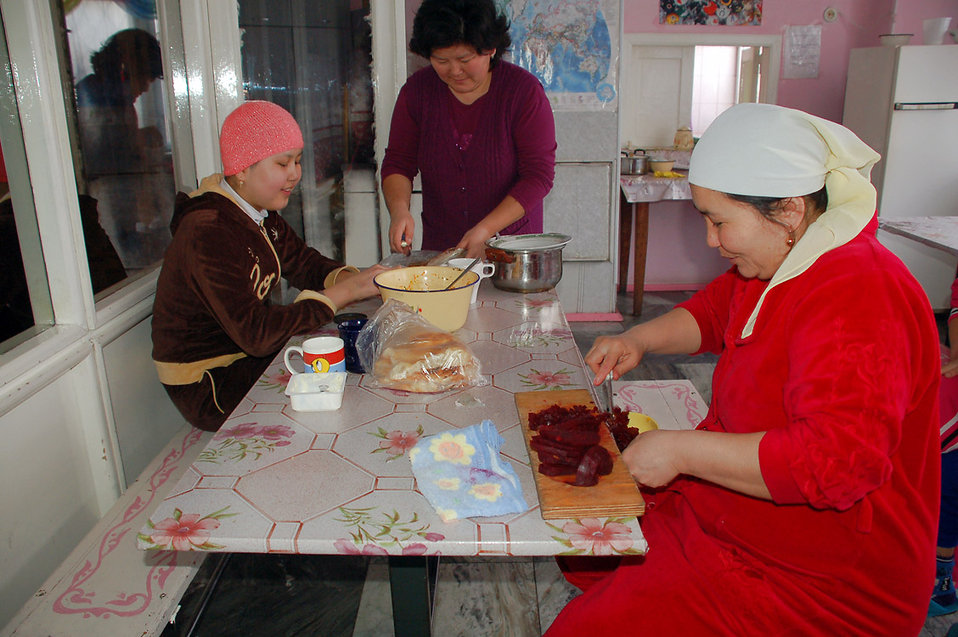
Manas Airmen tend to children's cancer center needs

Kygyz mothers and a young girl with cancer prepare a lunch of beets, potatoes and raw herring for the children who are recovering cancer patients Feb. 25 at Kyrgyzstan's only Children's Cancer Hospital, located in Bishkek. To help the families get through the healing, Manas Air Base, Kyrgyzstan, volunteers visit with the children.